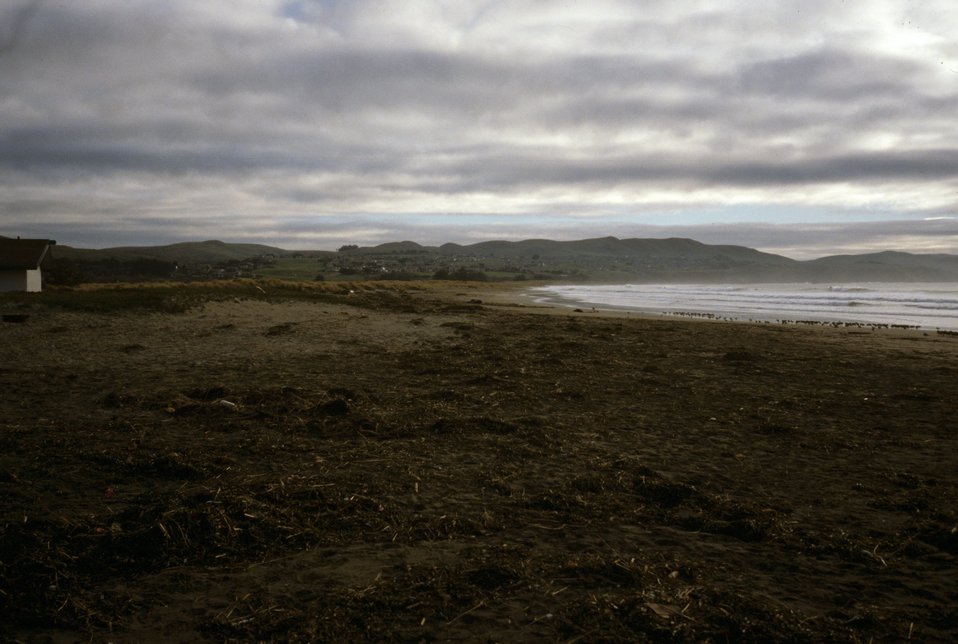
Doran Beach